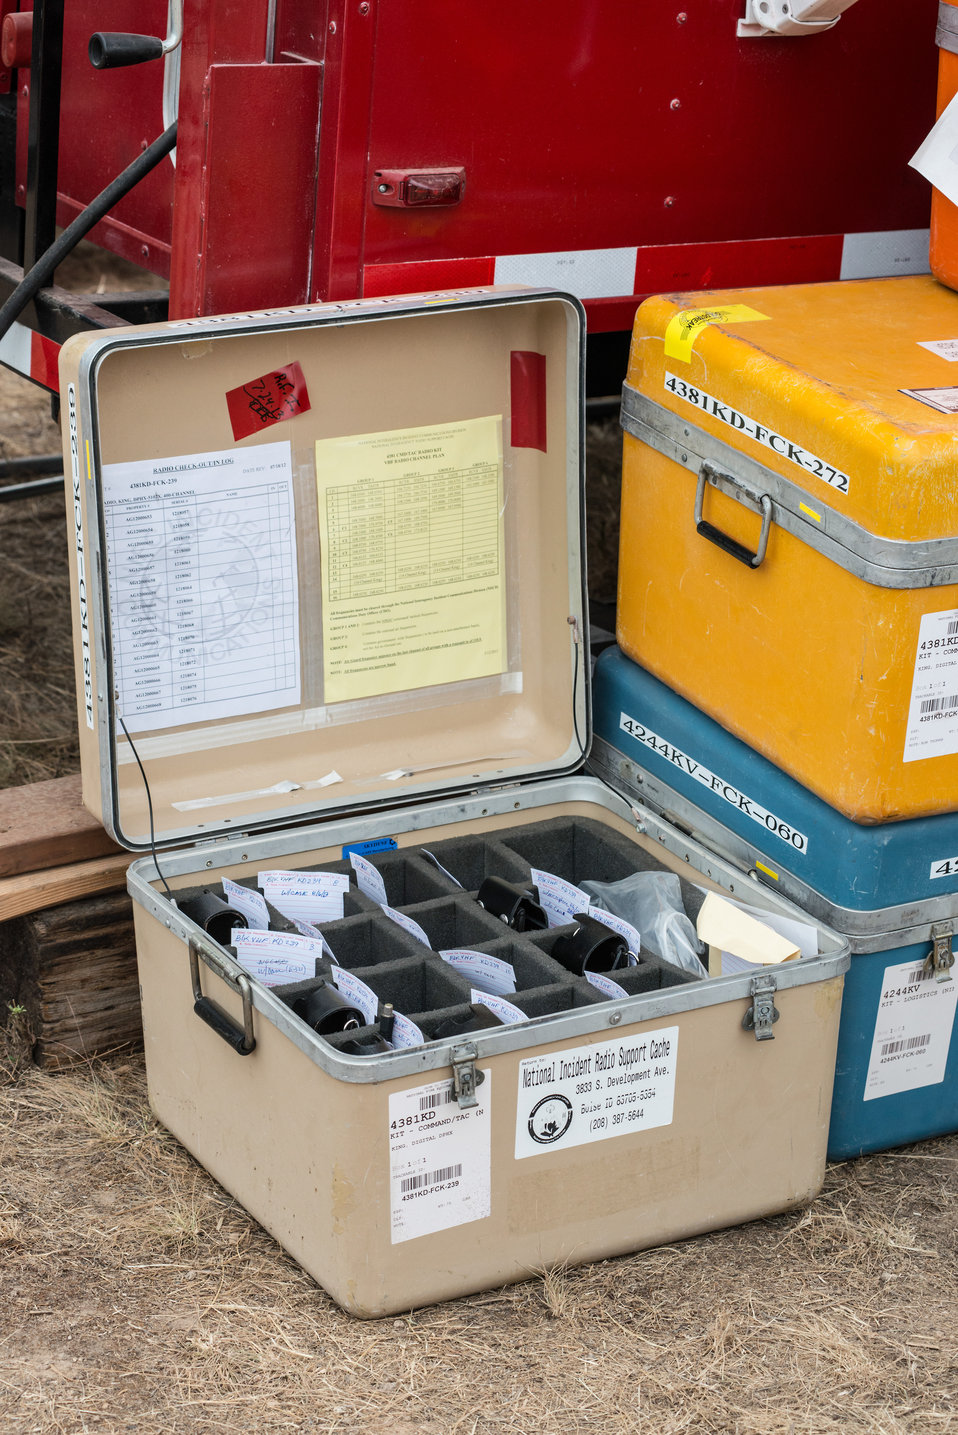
Land mobile radios are a mission essential part of wildlands firefighting; cases of radios have been cleaned, checked and sealed 'Ready For Issue' at the National Interagency Fire Center's National Interagency Incident Communications Division, in Boise, ID, and now stand ready for use at the Big Windy Complex Wildlands Fire, Incident Command Post (ICP) in Merlin, OR on Friday, Aug 9, 2013. The fire center is approximately 15 miles west of Interstate-5 and East Northeast of Galice, Oregon.